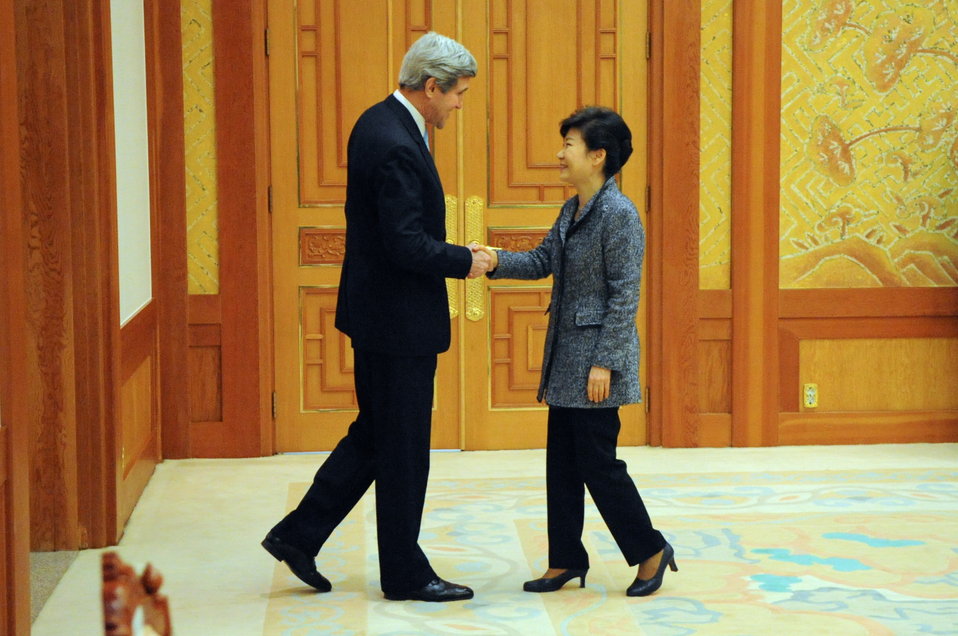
South Korean President Park Greets Secretary Kerry in Seoul

South Korean President Park Geun-hye greets U.S. Secretary of State John Kerry upon his arrival at Blue House in Seoul for a bilateral discussion on February 13, 2014.